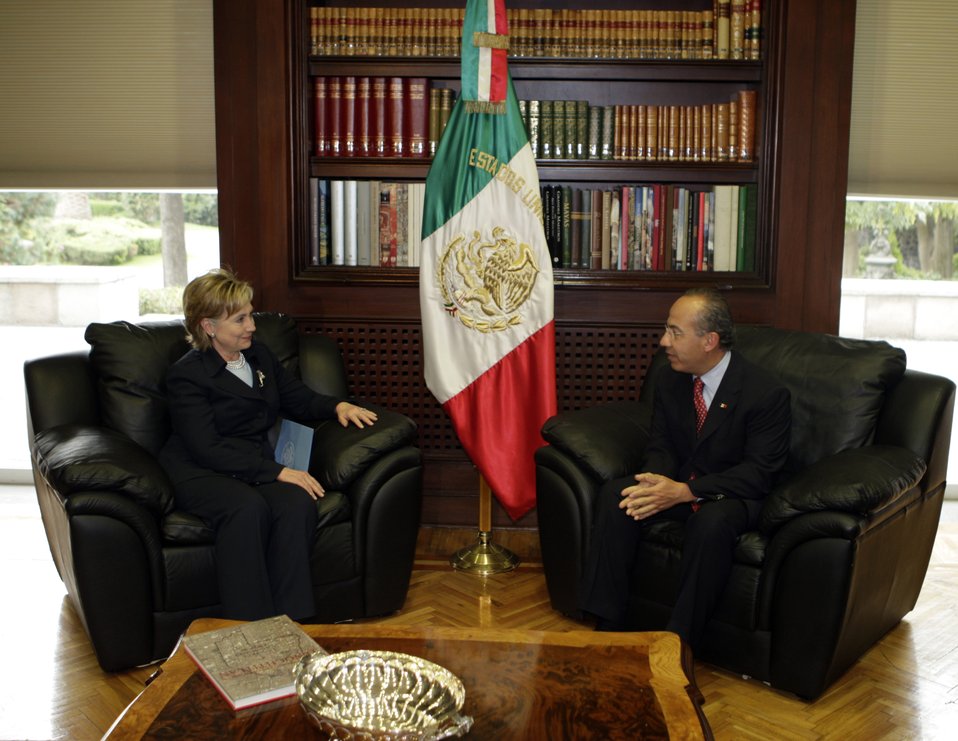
Secretary Clinton Meets Mexican President

Mexican President Felipe Calderon meets with U.S. Secretary of State Hillary Clinton inside Los Pinos presidential residence in Mexico City, March 25, 2009. Clinton is in Mexico for a two-day visit.